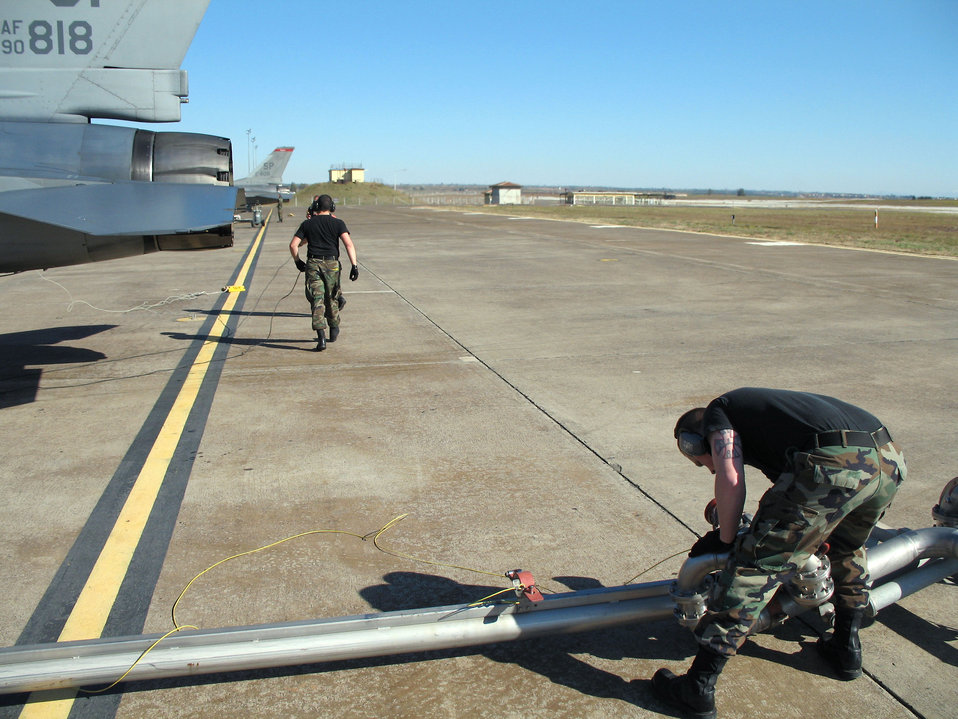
'Hot pitting' returns to Incirlik

Senior Airman William Murray and Senior Airman Blake Mellom inspect their equipment between